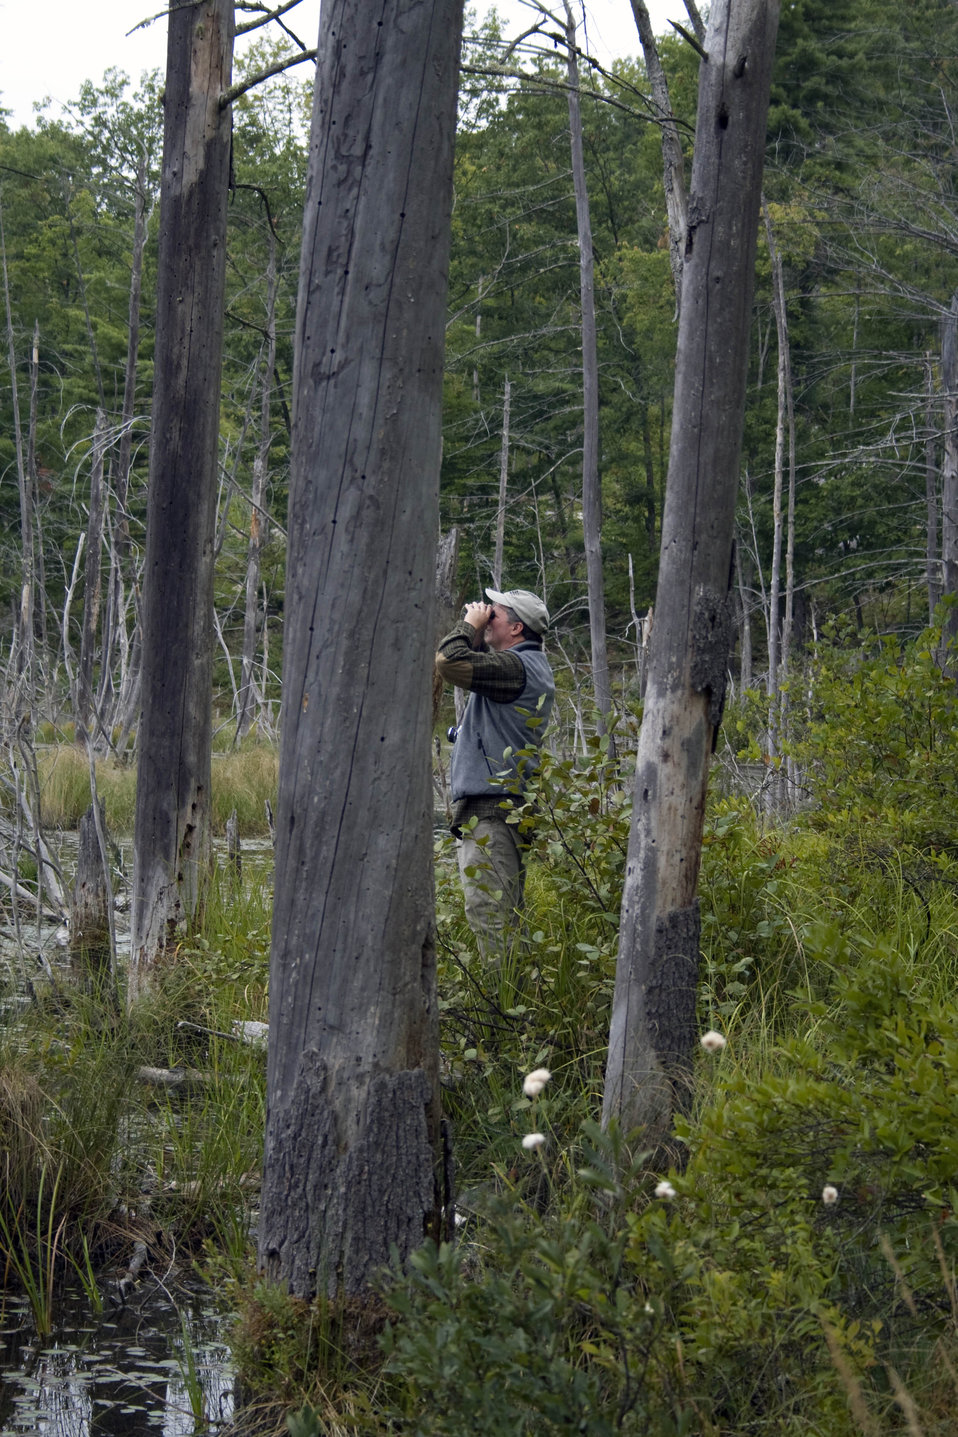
birdwatching

Bird watching in New Hampshire.